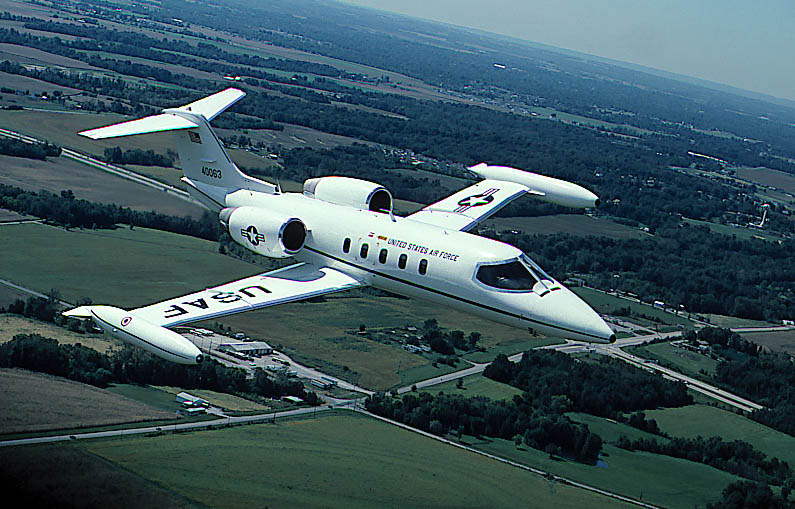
C-21A

FILE PHOTO -- The C-21A provides cargo and passenger airlift and can transport litters during medical evacuations. The C-21A's turbofan engines are pod-mounted on the sides of the rear fuselage. The swept-back wings have hydraulically actuated, single-slotted flaps. The aircraft has a retractable tricycle landing gear, single steerable nose gear and multiple-disc hydraulic brakes. The C-21A can carry eight passengers and 42 cubic feet (1.26 cubic meters) of cargo. The fuel capacity ofthe C-21A is 931 gallons (3,537.8 liters) carried in wingtip tanks. The safety and operational capabilities of the C-21A areincreased by the autopilot, color weather radar and tactical air navigation (TACAN) system, as well as HF, VHF and UHF radios.